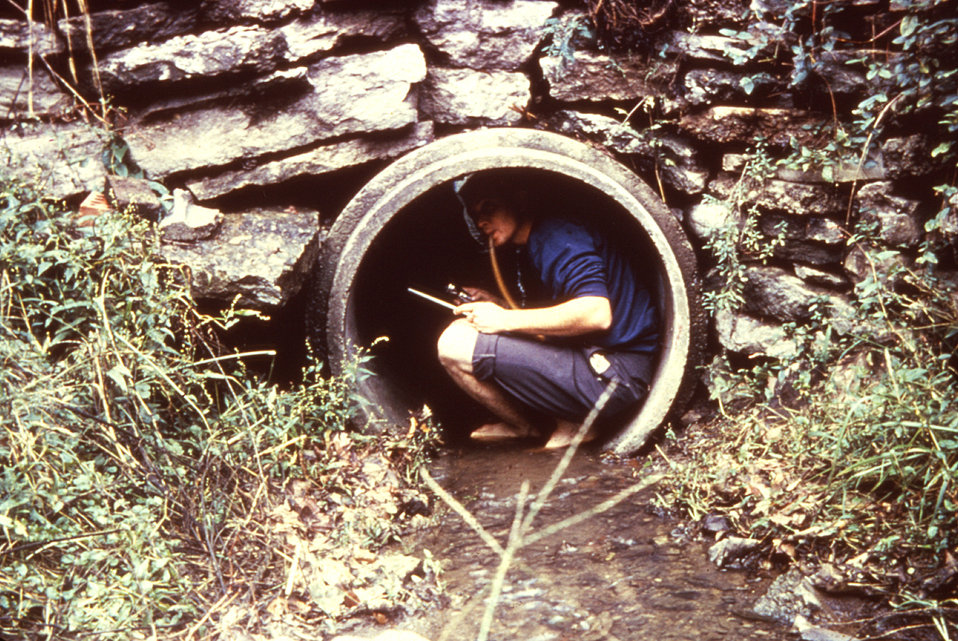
This 1965 photograph depicts an entomologic field technician using an aspiration suction tube in order to trap adult mosquitoes from the interior of a drainage pipe.